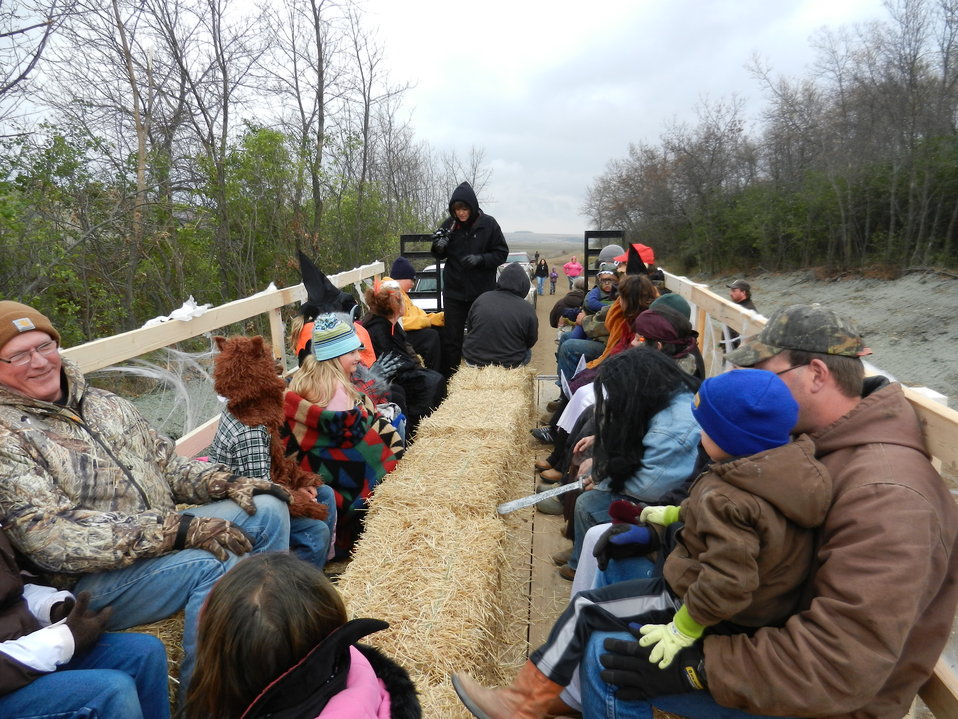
Haunted Hayride

All ages were welcome!